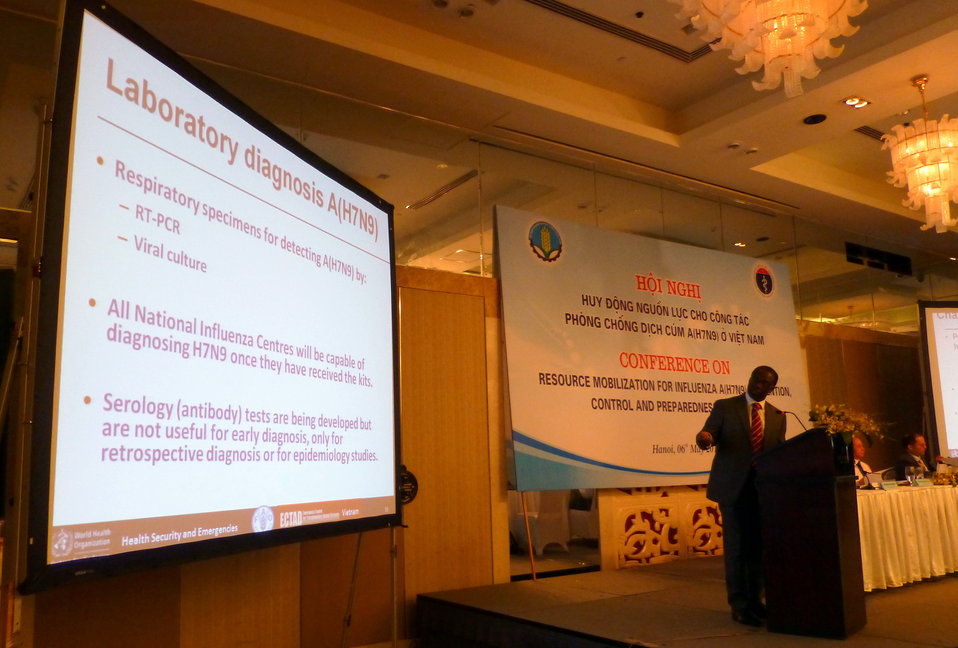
Dr. Babtunde Olowokure, WHO, speaks at the Conference on Resource Mobilization for Influenza A (H7N9) Prevention, Control and Preparedness in Vietnam

Hanoi, May 6, 2013
Supported by USAID Vietnam